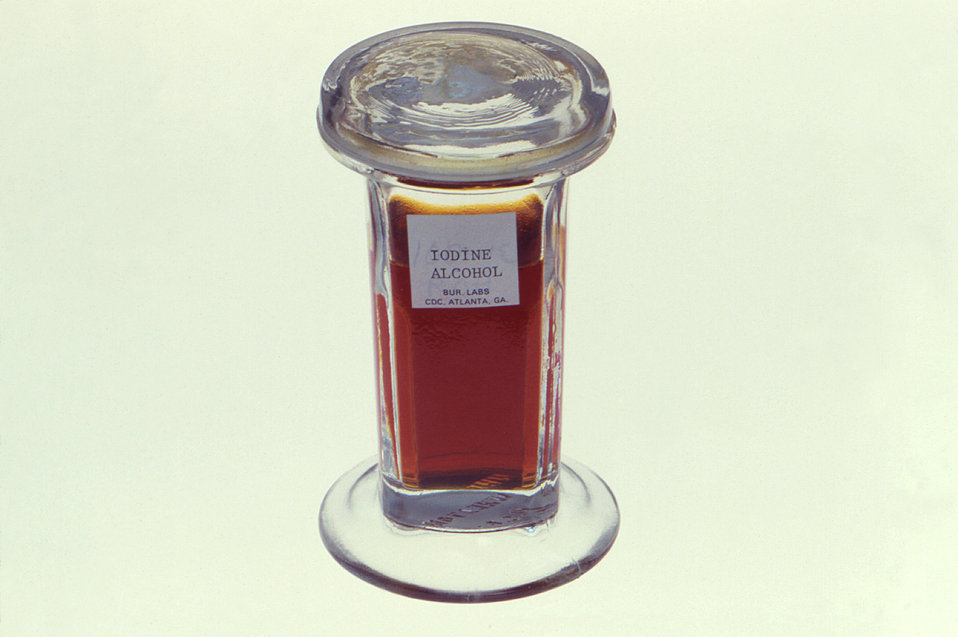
This 1981 image depicted a Coplin jar containing a mixture of two commonly used laboratory reagents, alcohol and iodine.